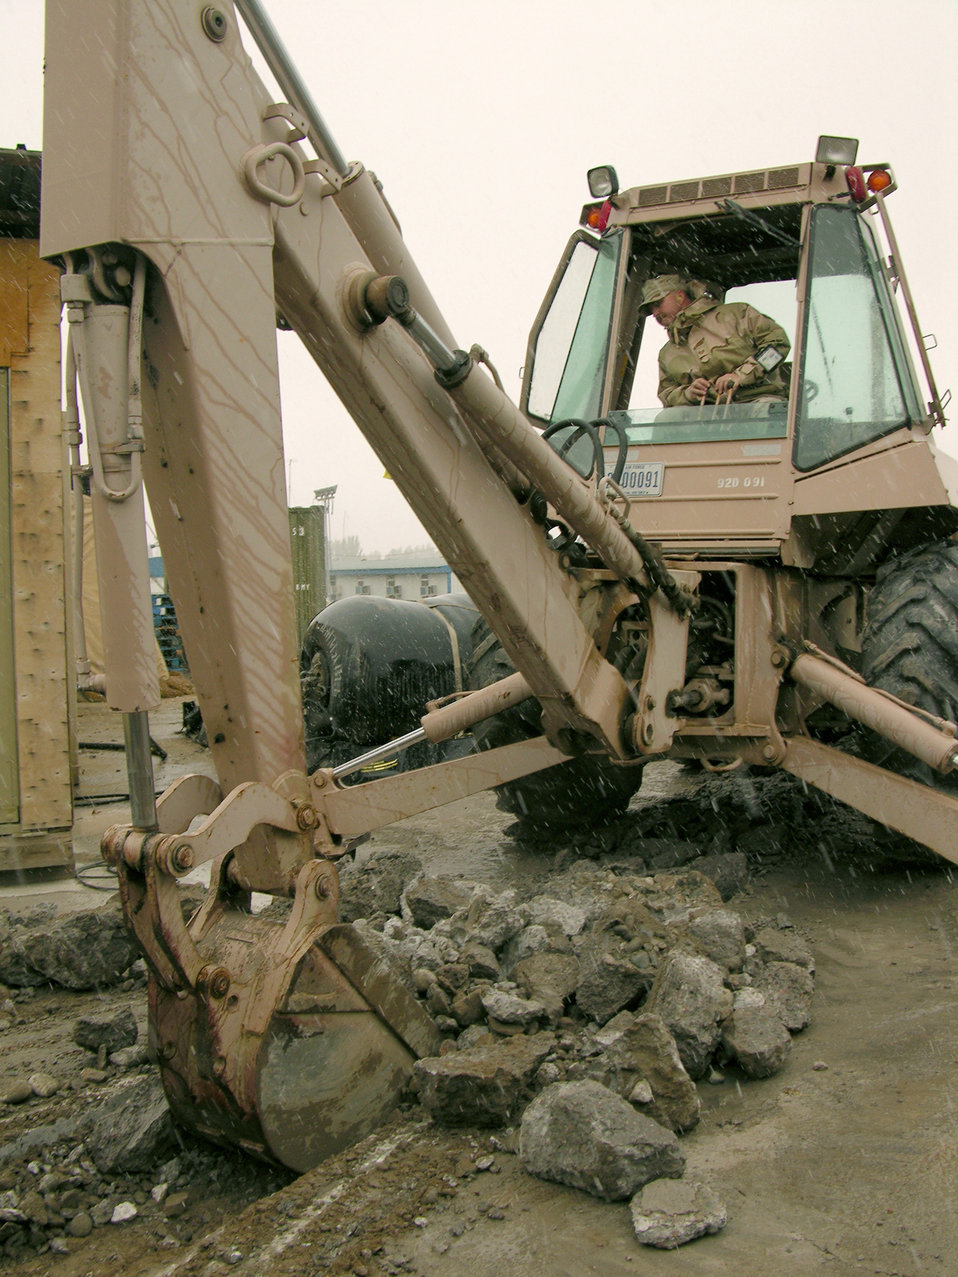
Deployed Airmen build a better life in Kyrgyzstan

MANAS AIR BASE, Kyrgyzstan -- Tech. Sgt. Robert Wyatt scoops up rubble to create a hole to run electrical cable. He is assigned to the 376th Expeditionary Civil Engineer Squadron here and is deployed from Robins Air Force Base, Ga.